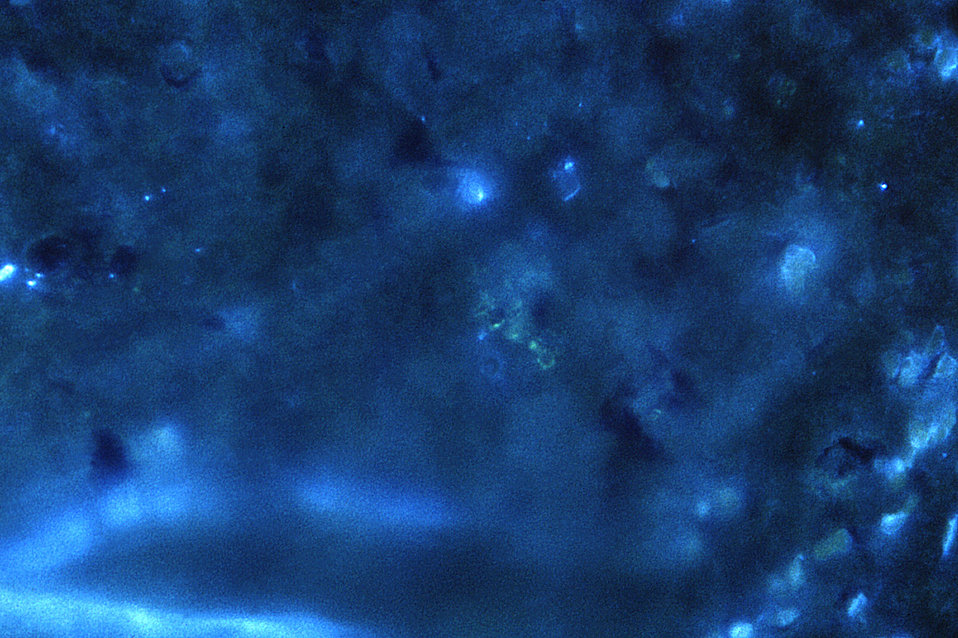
Magnified 562X, this fluorescent antibody-stained photomicrograph reveals the presence of Histoplasma capsulatum antigens in this human lung tissue specimen.